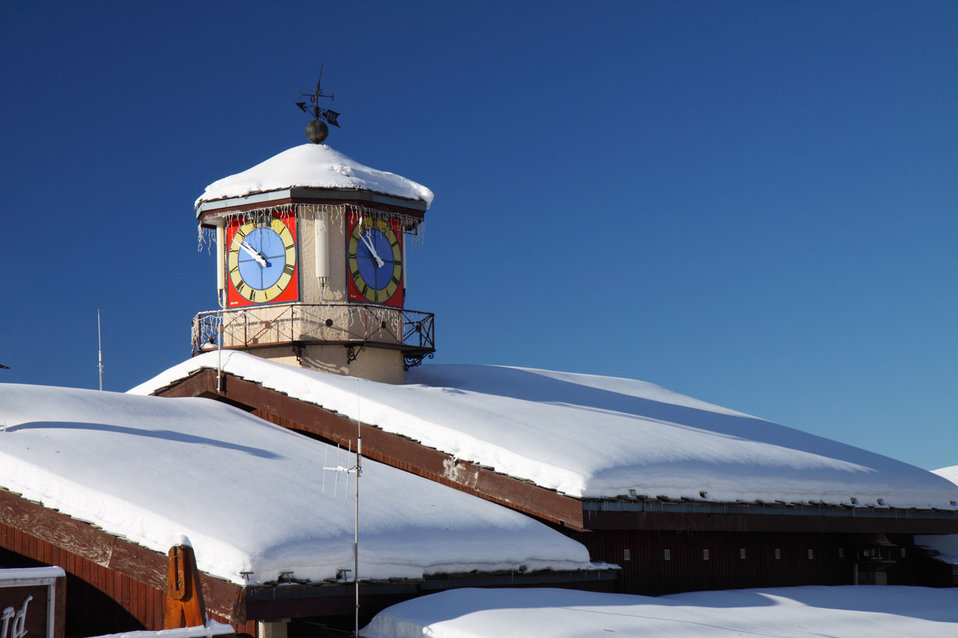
Snow roof with clock

Clock in belle plagne.